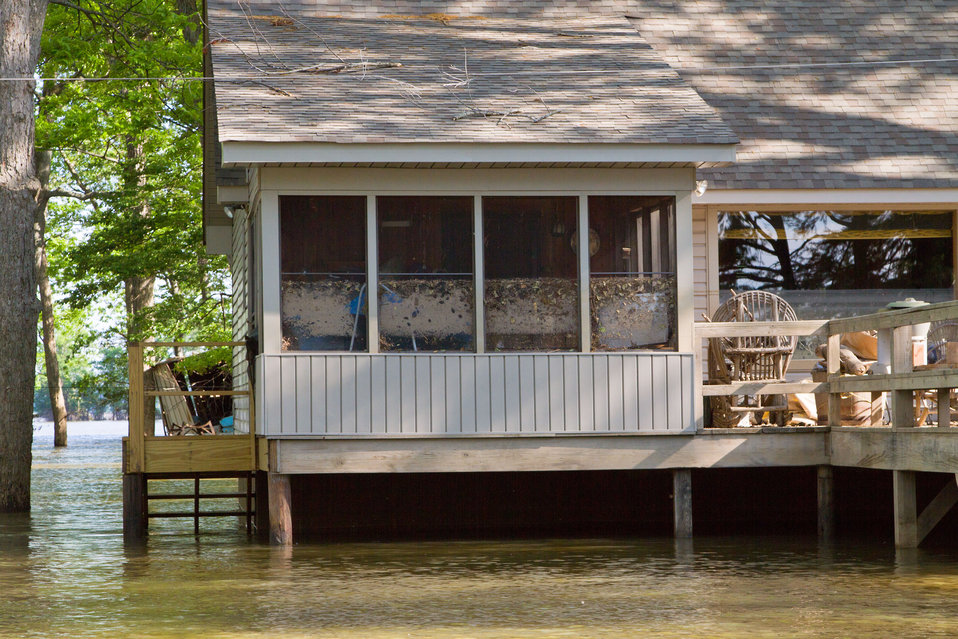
Leaves and mud on the glass show how high the flood waters had risen on this one of approximately 300 homes in the Lauderdale County river basin or “Below the Bluffs,” in TN, on Saturday, May 21, 2011. They are constructed either on stilts; or float on Styrofoam blocks and are tethered to stationary poles.